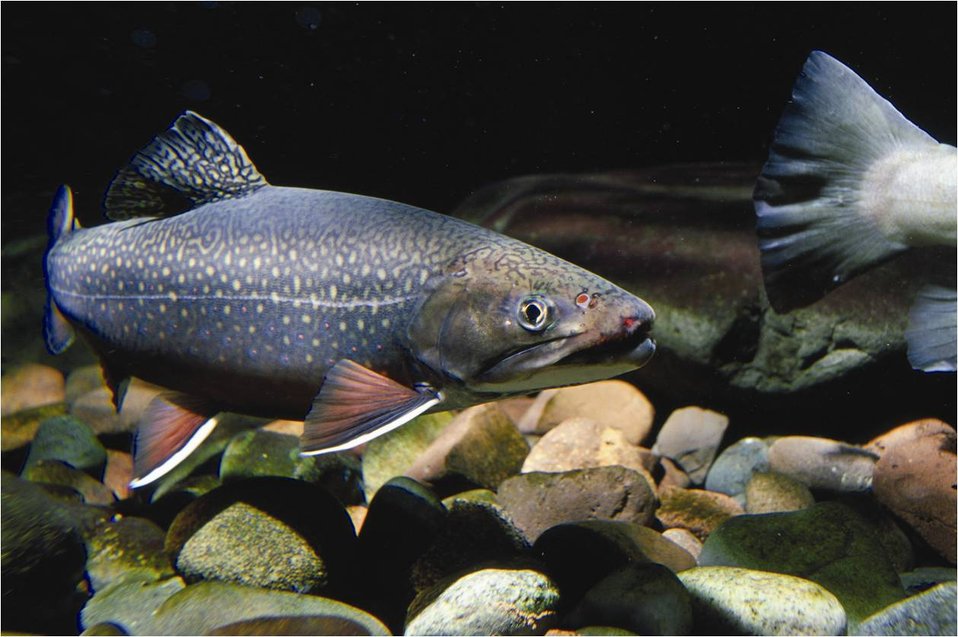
Eastern Brook Trout